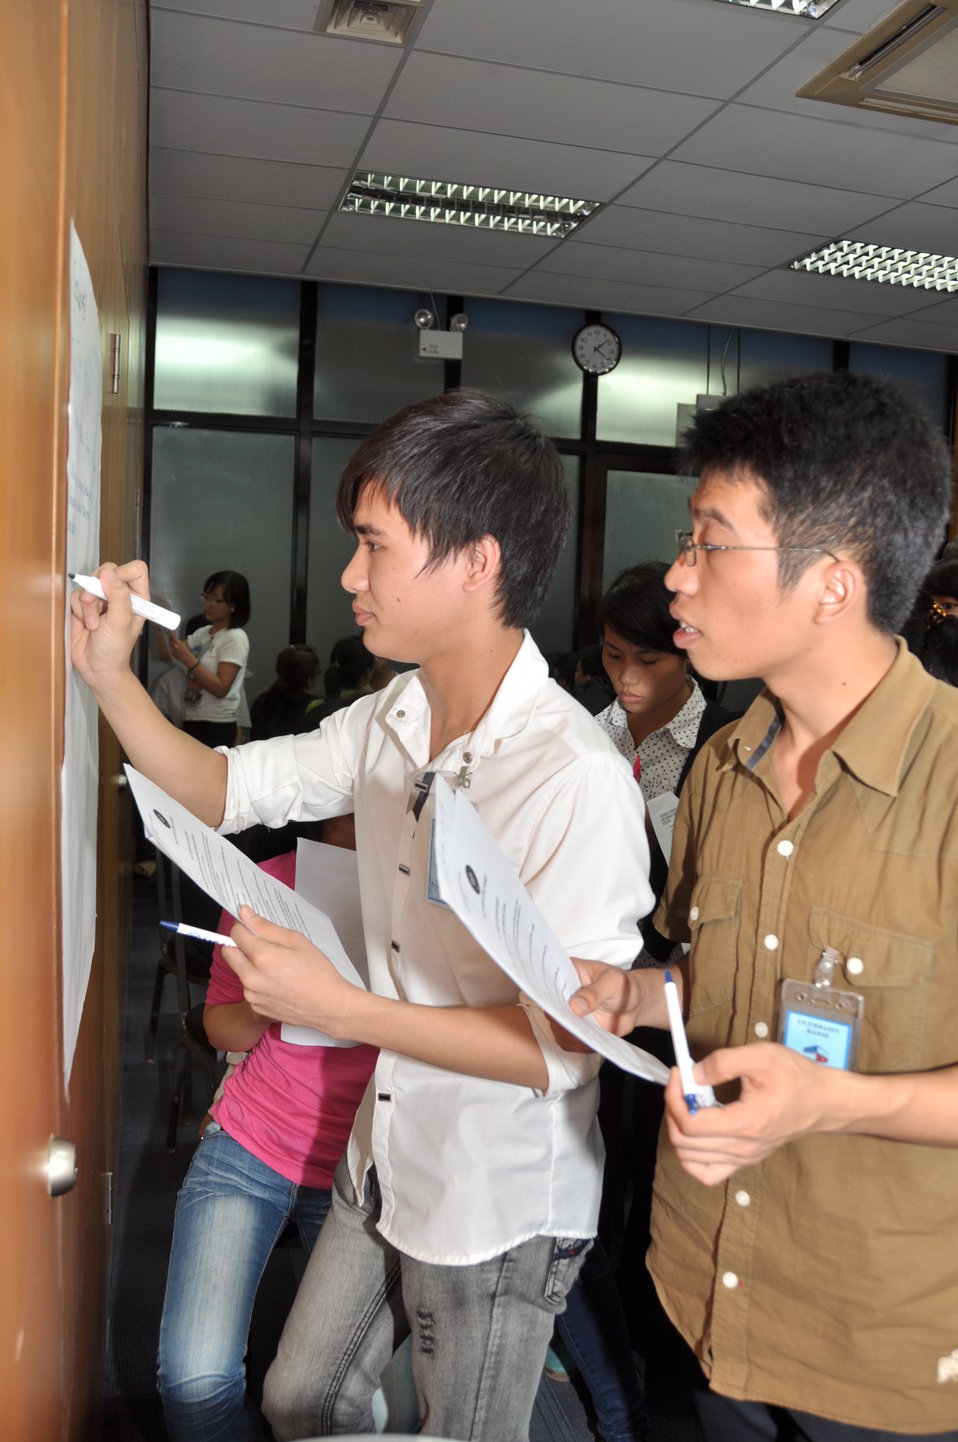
Vietnamese university students join the Business Plan Mashup exercise

Photo: @USAIDVietnam, November 16, 2012